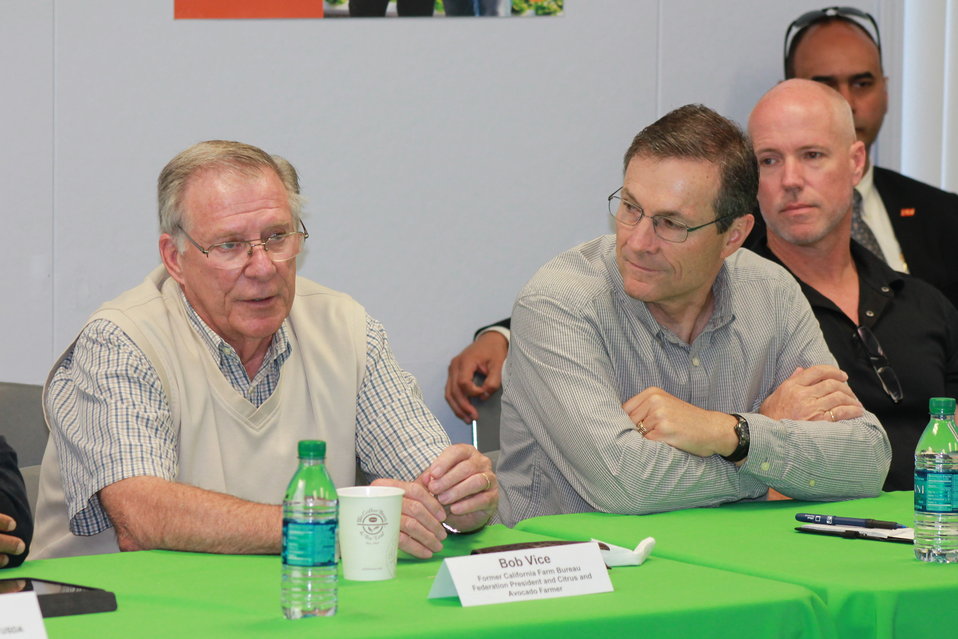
Organic producers state their concerns to Agriculture Secretary Tom Vilsack at a roundtable discussion hosted by GoGreen Agriculture in Encinitas, CA on Apr. 17, 2013. GoGreen Agriculture is a family owned and operated hydroponics organic producer of lettuce, kale and spinach. GoGreen builds mini-farms in or near large cities and sells the premium produce locally. This eliminates major transportation time and cost, improves freshness, reduces petroleum consumption, and provides local jobs.